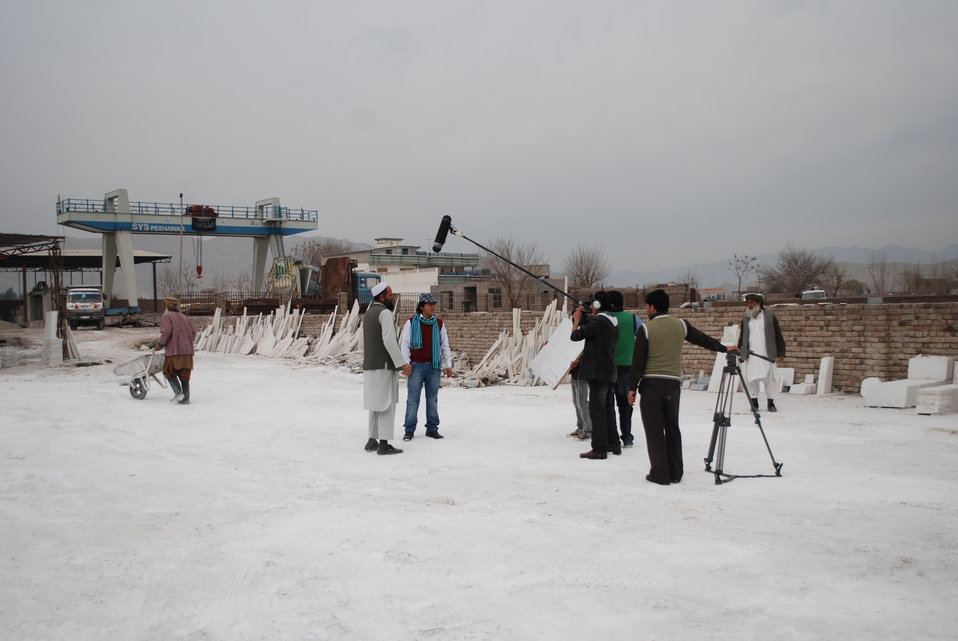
'On the Road' in Nangarhar Province